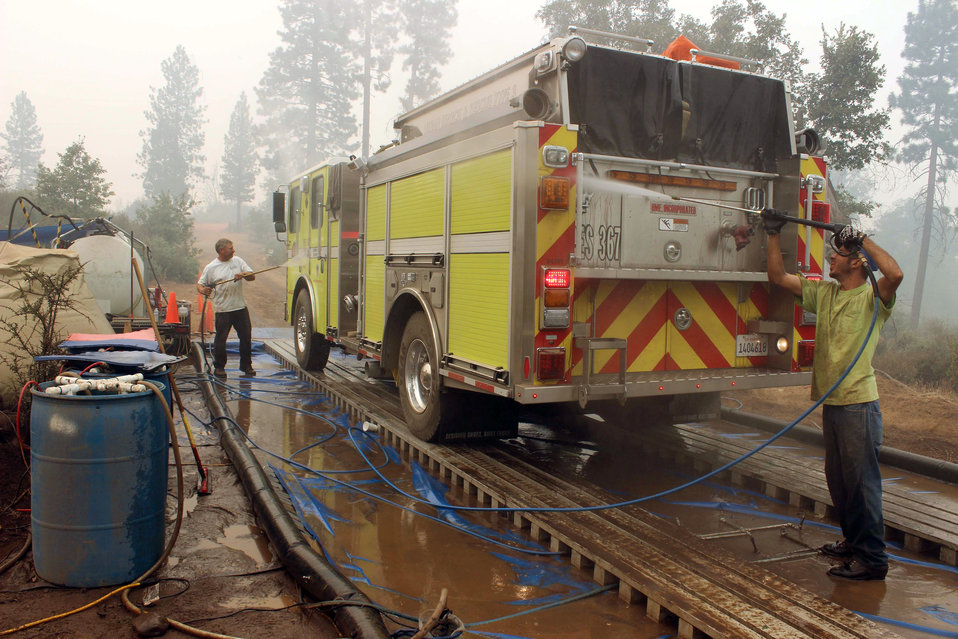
A fire engine is washed down at weed wash unit at the Rim Fire. Even amidst a forest fire precautions are taken to prevent the spread of invasive species weeds during the Rim Fire. The Rim Fire in the Stanislaus National Forest near in California began on Aug. 17, 2013 and is under investigation. The fire has consumed approximately 235,841 acres and is 70% contained.